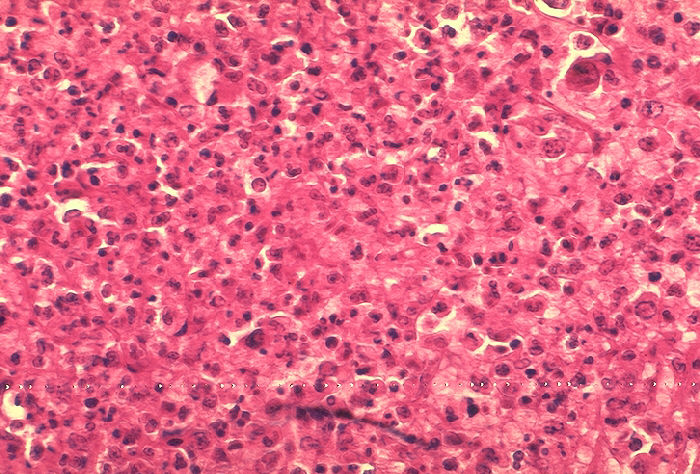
Histopathology of mediastinal lymph node in fatal human anthrax.